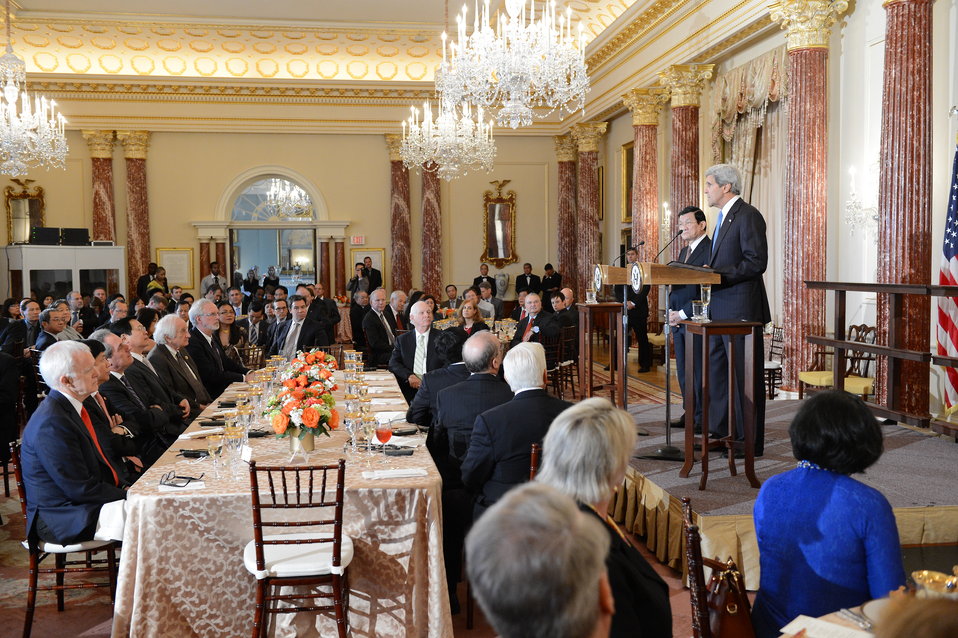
Secretary Kerry and Vietnamese President Truong Tan Sang Address the Audience

U.S. Secretary of State John Kerry and Vietnamese President Truong Tan Sang address the audience during their working lunch at the U.S. Department of State in Washington, D.C., on July 24, 2013.